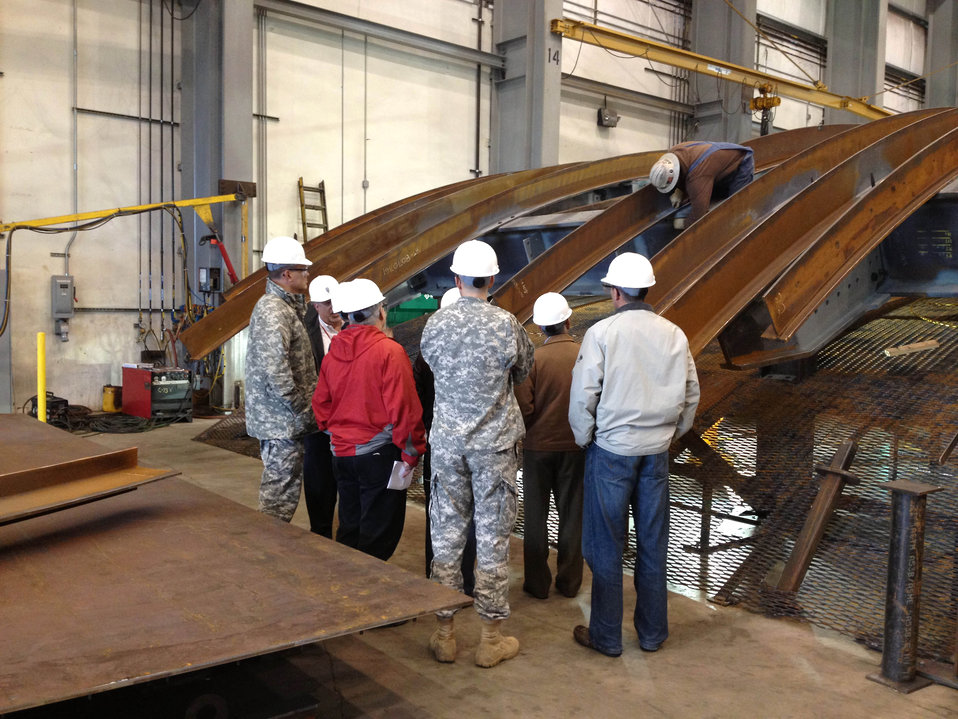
District staff checks progress on Folsom Dam auxiliary spillway gates

Personnel from the U.S. Army Corps of Engineers Sacramento District watch as a crew member secures a rib on a tainter gate for the new Folsom Dam auxiliary spillway Nov. 28, 2012, at the Oregon Iron Works’ Vancouver, Wash., facility. Col. Bill Leady, commander for the Sacramento District, and other staff took a tour of the site to gauge the progress on 12 massive bulkhead and tainter gates, which will control the flow of water from Folsom Lake through the spillway’s control structure. The spillway project is a joint effort of the U.S. Army Corps of Engineers, the U.S. Bureau of Reclamation, and state and local partners to reduce flood risk throughout the Sacramento region. The project is scheduled to be completed in 2017.